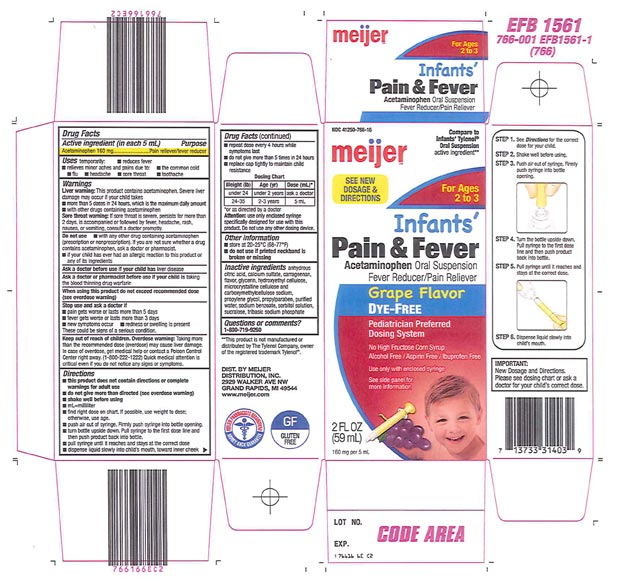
Recalled - Acetaminophen infant suspension liquid

November 1, 2013 – Product Recall – Perrigo Initiates Nationwide Voluntary Product Recall of Acetaminophen Infant Suspension Liquid, 160 Mg/5 Ml, Due to a Potential Defect with the Co-packaged Oral Syringe.